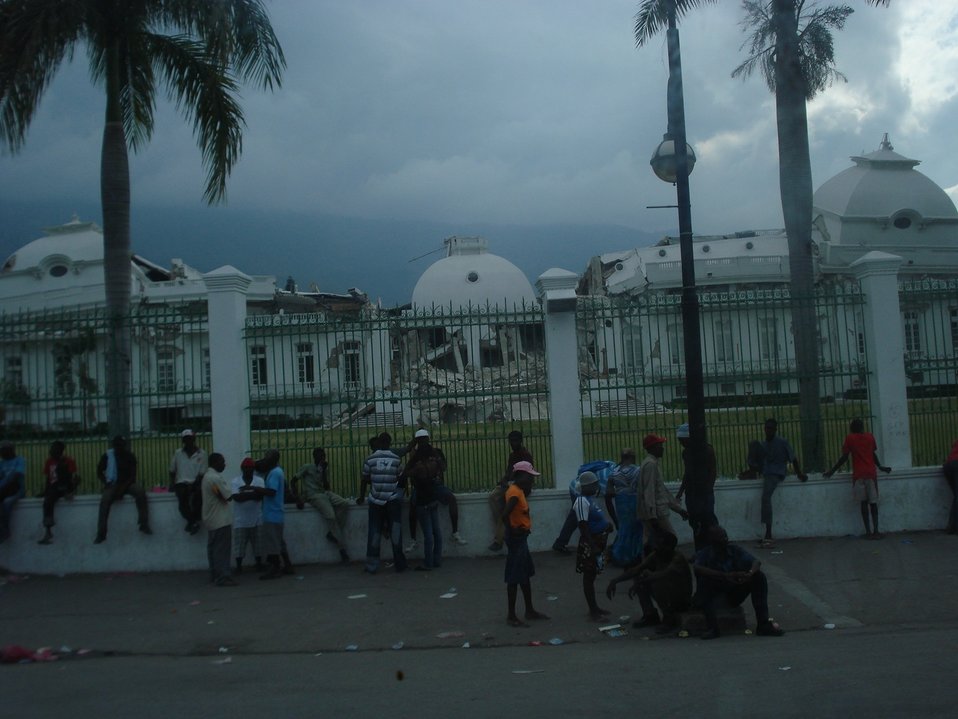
Presidential Palace (Haiti Earthquake - 2010)

Photos shot by team sent by the FCC to assist communications recovery in Haiti. Photos shot by team sent by the FCC to assist communications recovery in Haiti.